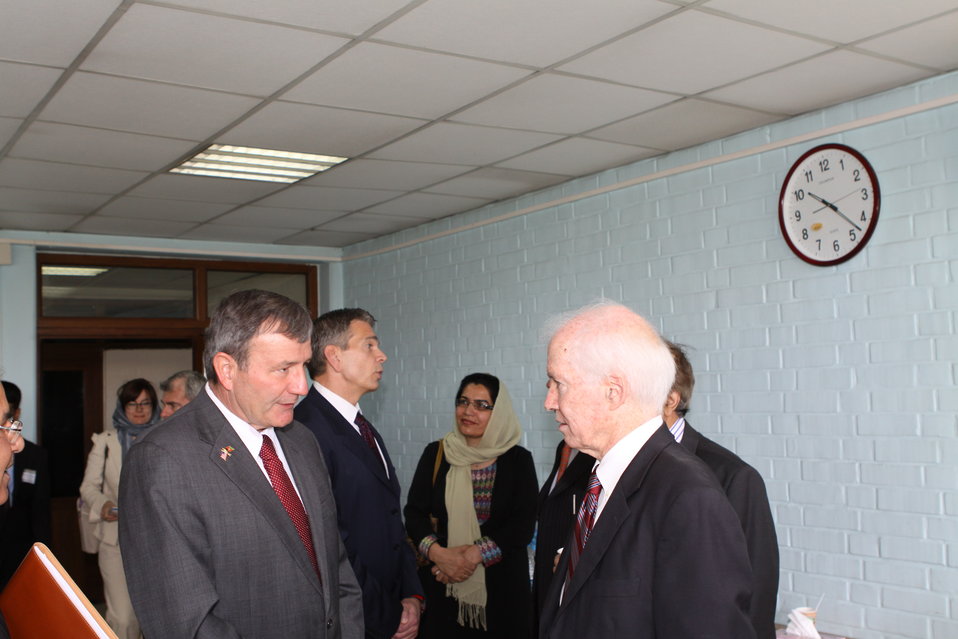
100526 AUAF Graduation 032